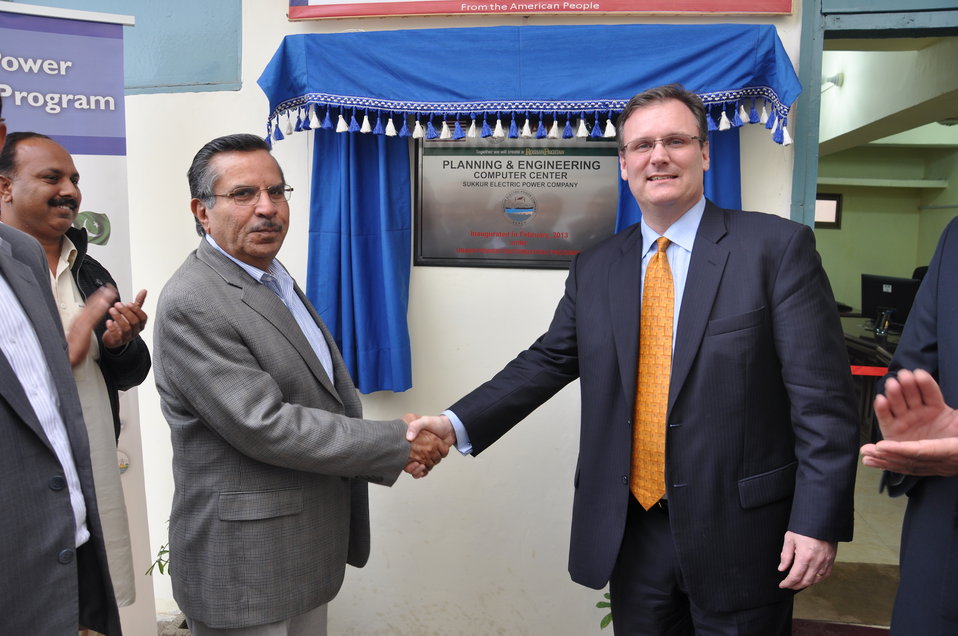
USAID provides State-of-the-Art Planning and Engineering Equipment to SEPCO

“It is a huge step towards helping Sukkur Electric Supply Company SEPCO grows as an independent Power Distribution Company in the region. I am confident that with this effort, SEPCO will now be able to better supply electricity to consumers in Sukkur.” Sukkur Electric Power Company, Chief Executive Officer

Sukkur is a newly created DISCO, and cateres to 150,000 customers. Unlike other DISCOs, SEPCO never had a Planning and Engineering (P&E) section in place, making it very unique. Consequently, for the first time, a P&E section has been established at SEPCO through USAID’s assistance.